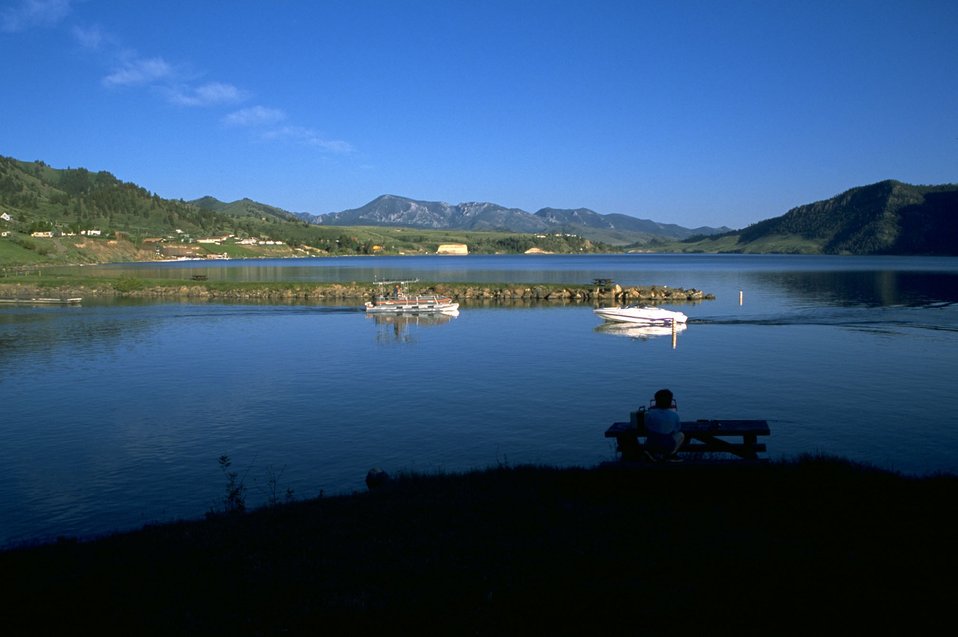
Sun shining on two boats in Holter Lake